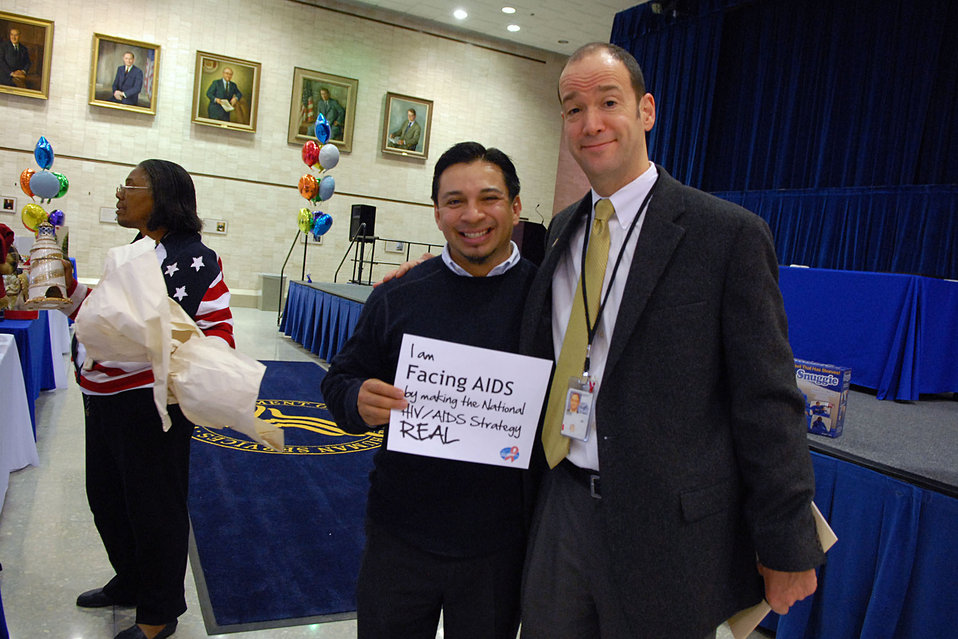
I am Facing AIDS by making the National HIV/AIDS Strategy REAL